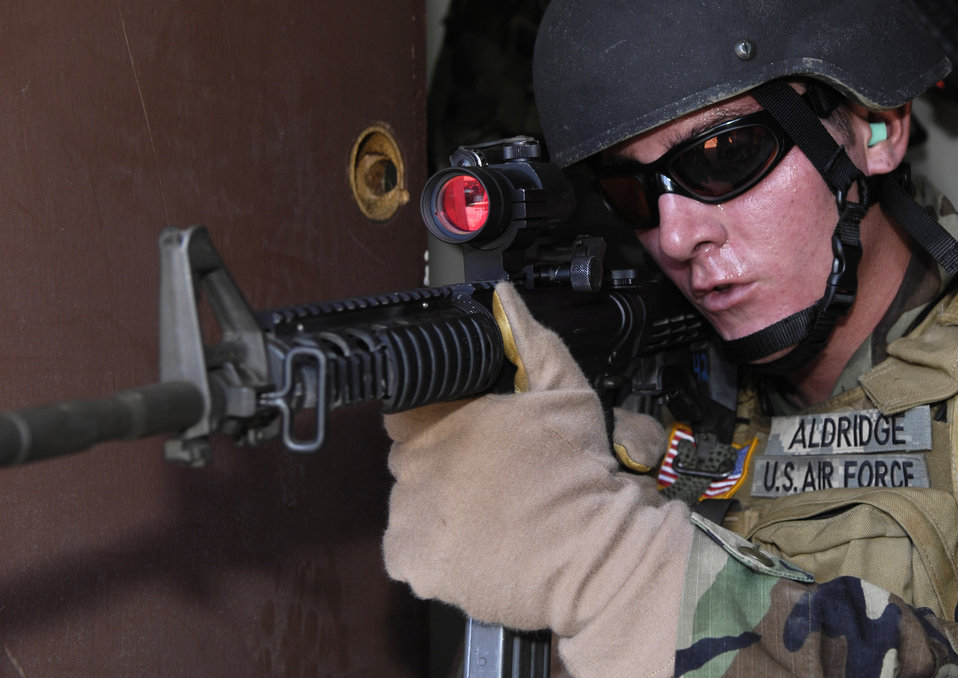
Battlefield Airmen train on Hickam

Airman James Aldridge, a joint terminal attack controller, posts security during close-quarters battle training May 7 at Hickam Air Force Base, Hawaii. The JTACs were using an old housing area on Hickam AFB to conduct realistic training in an urban environment. Airman Aldridge is assigned to the 25th Air Support Operations Squadron at Wheeler Army Air Field, Hawaii.